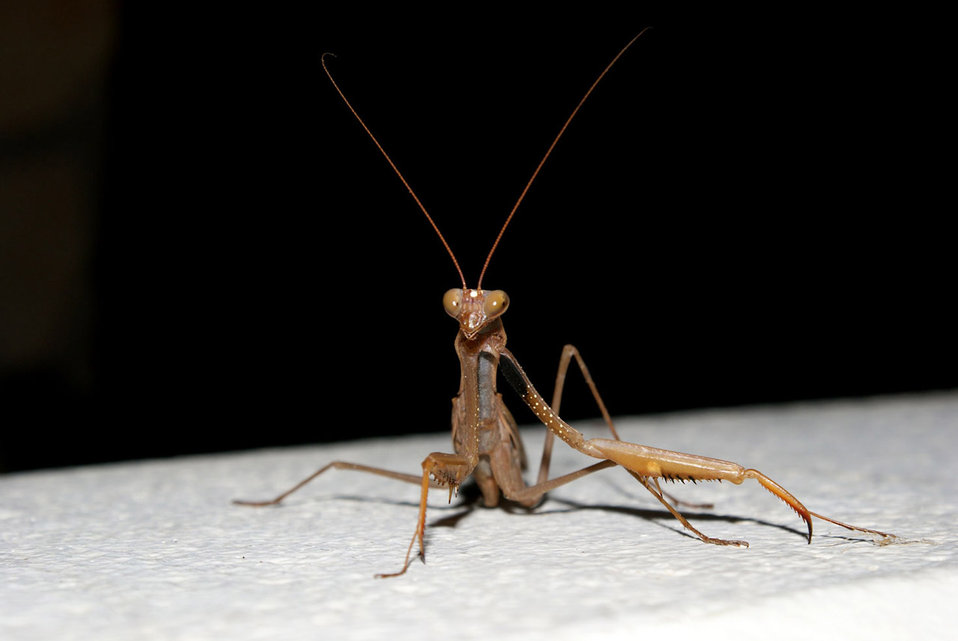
Praying mantis at dusk.